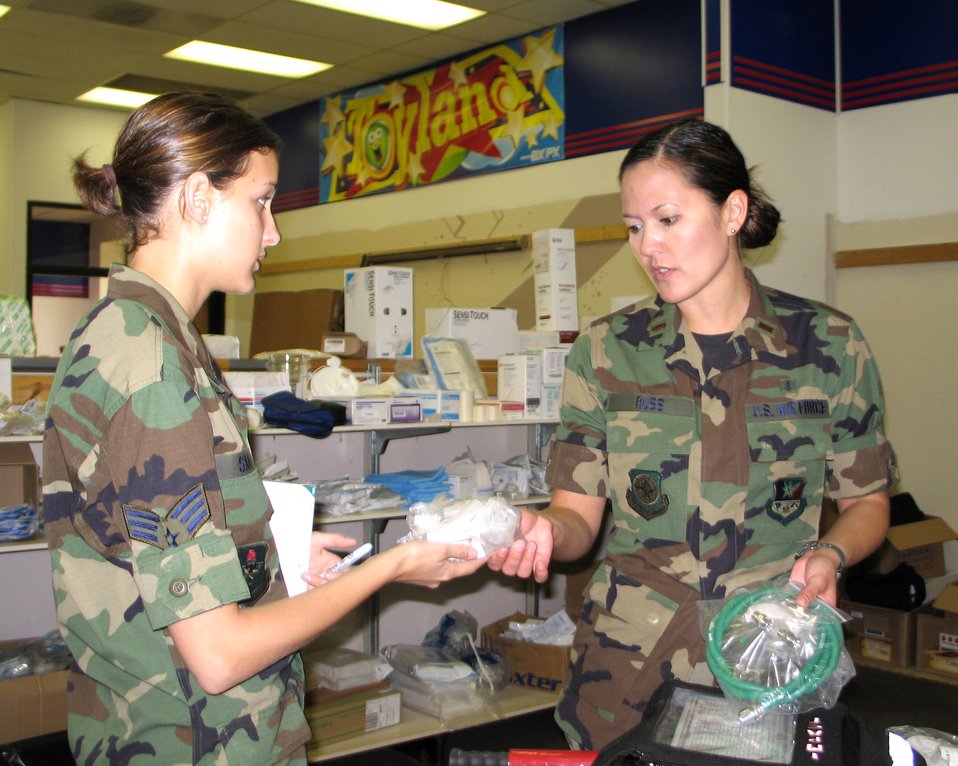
Task Force Compassion

ELLINGTON FIELD, Texas -- Second Lt. Rose Russ (right) and Senior Airman Kelly Smith sort and stock medical supplies here while transforming an abandoned base exchange facility and Toy Land into a 10-bed medical treatment facility. Both are members of Task Force Compassion established in support of the Hurricane Rita relief effort. 1)